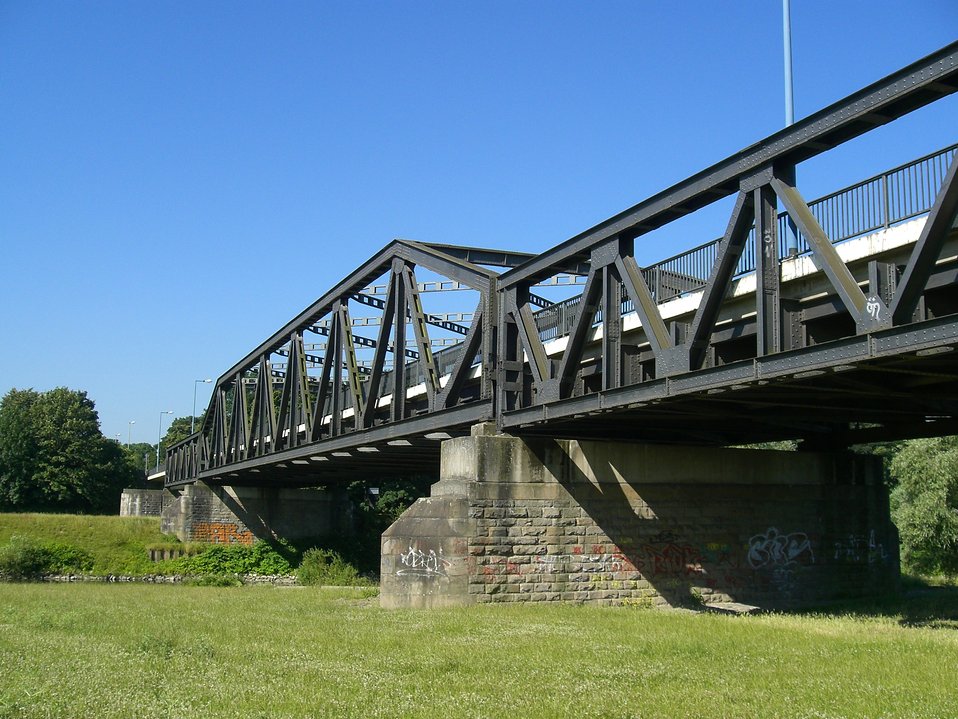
Deutsch: Raffelbergbrücke